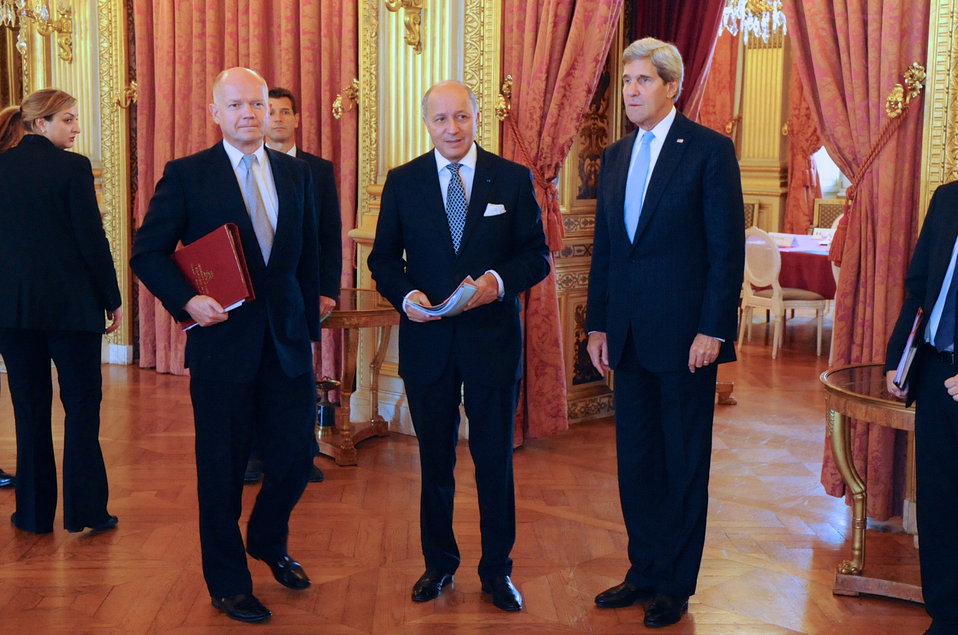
Secretary Kerry Pauses With French Foreign Minister Fabius, British Foreign Secretary Hague

U.S. Secretary of State John Kerry pauses with British Foreign Secretary William Hague and French Foreign Minister Laurent Fabius before the P3 ministers held a meeting focused on Syria and other world issues at the Ministry of Foreign Affairs in Paris on September 16, 2013.